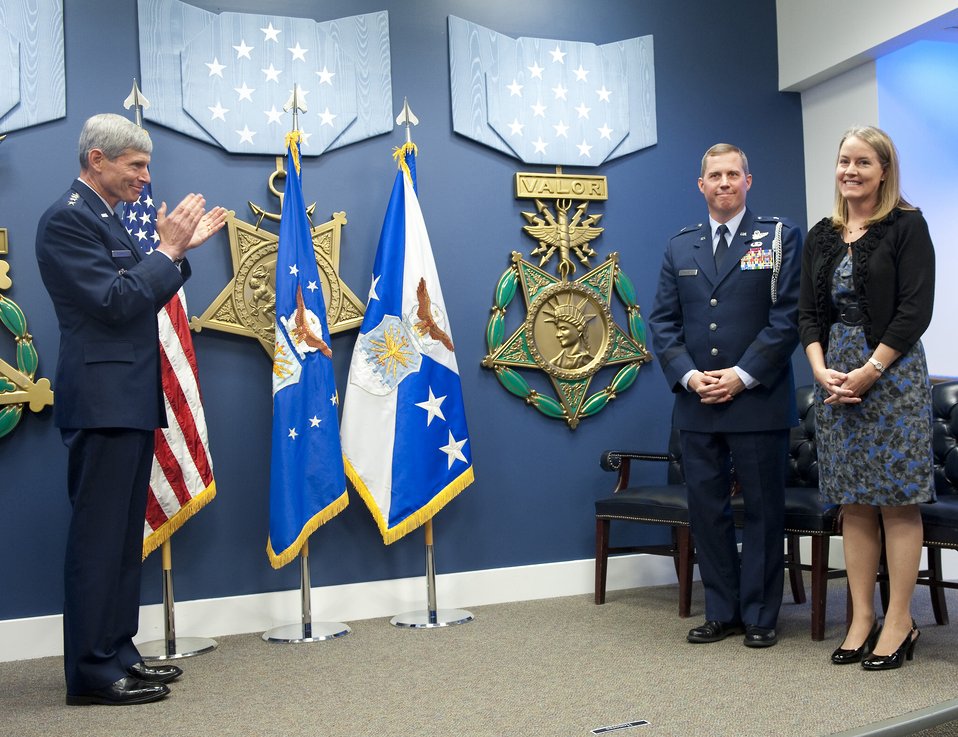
O'Malley Award

Air Force Chief of Staff Gen. Norton Schwartz (left) applauds after presenting the 2010 General and Mrs. Jerome F. O'Malley award to Brig. Gen. Thomas W. Bergeson and his wife Pamela during a ceremony in the Pentagon Oct. 4, 2010. The award is presented annually to the wing commander and spouse team who have best exhibited their own courage, power, grace and beauty in caring for Air Force families. The award was established after the O'Malleys, who were known for their leadership and contributions to Air Force families and communities, were tragically killed in a plane crash in 1985.